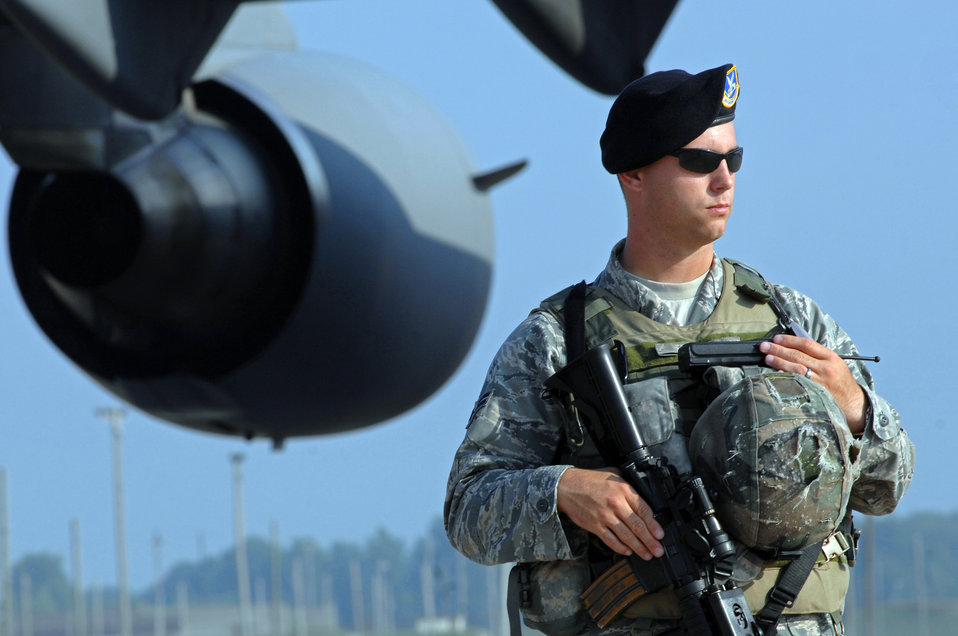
Don't come any closer

Airman 1st Class Johnathan Hart guards the perimeter of a C-17 Globemaster III during a logistics movement exercise, Sept. 11, 2009, at Whiteman Air Force Base, Mo. Airmen participate in these exercises every three to four months to keep their skills sharp for real world missions. He is assigned the 509th Security Forces Squadron.